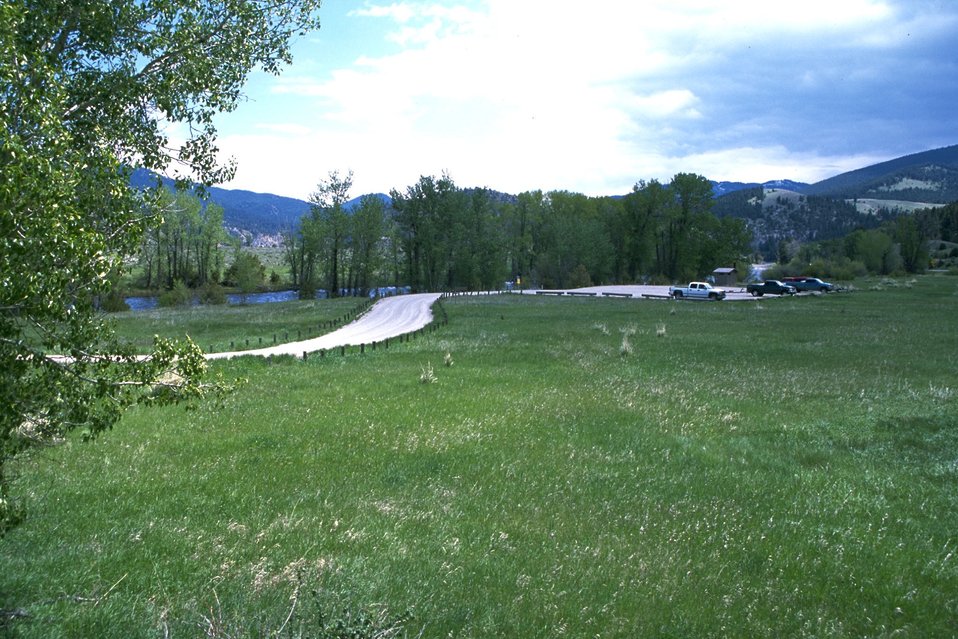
The parking lot of Jerry Creek Day Use Area